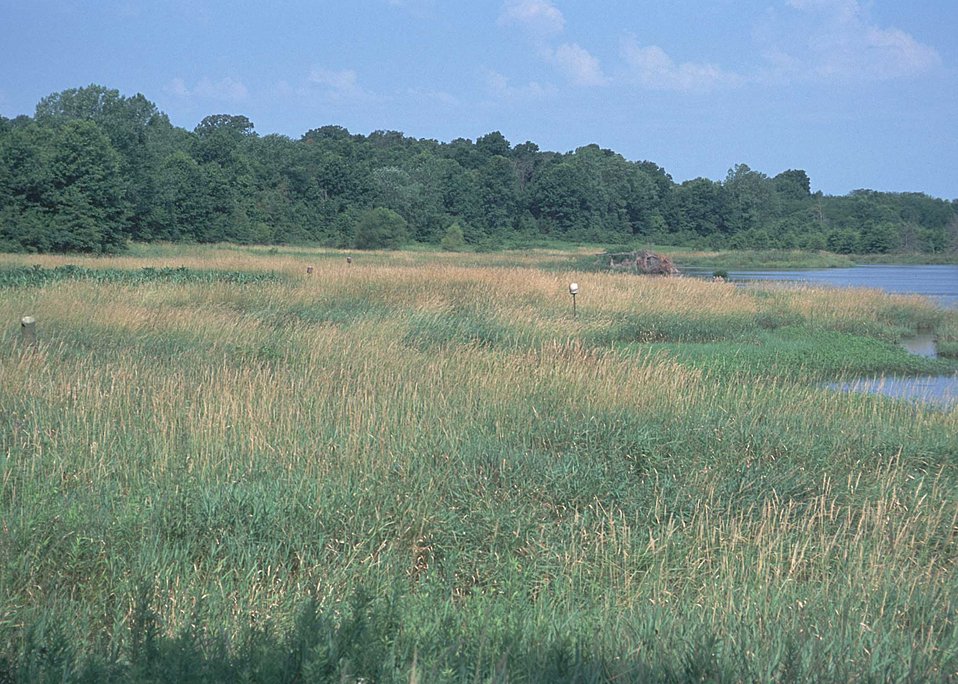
Grasses that are part of a restored wetland in Van Buren County, Iowa offer wildlife habitat.